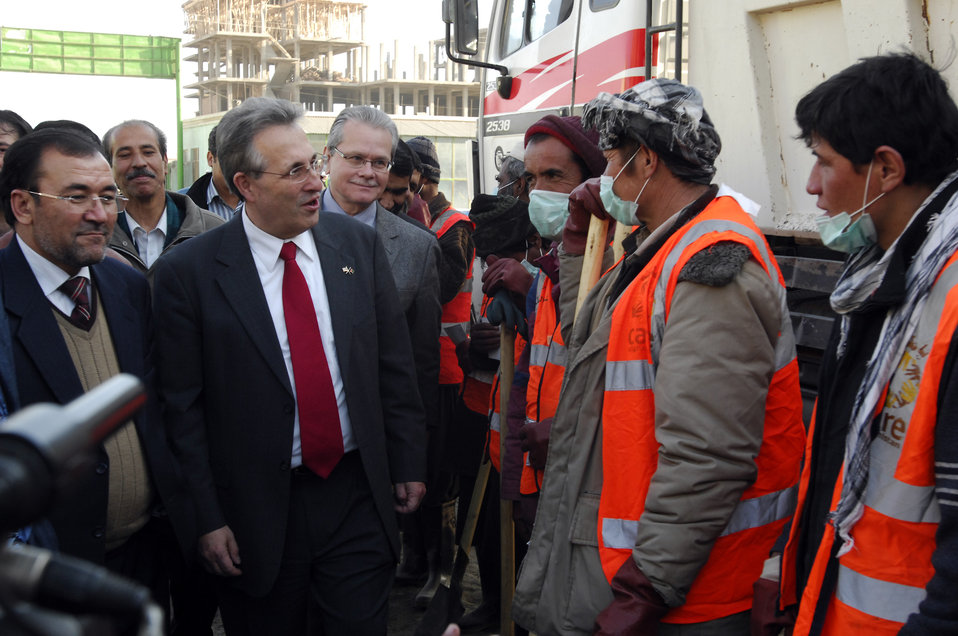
Care94